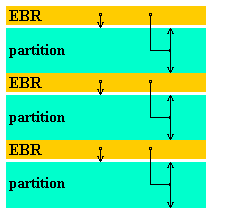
Extended boot record